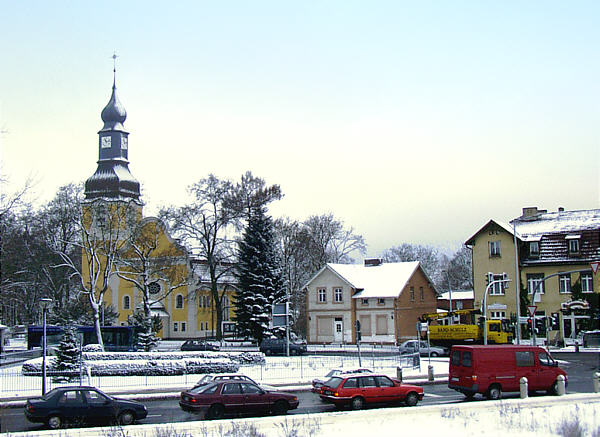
Deutsch: Stadtzentrum mit Kirche Hohen Neuendorf, Deutschland.